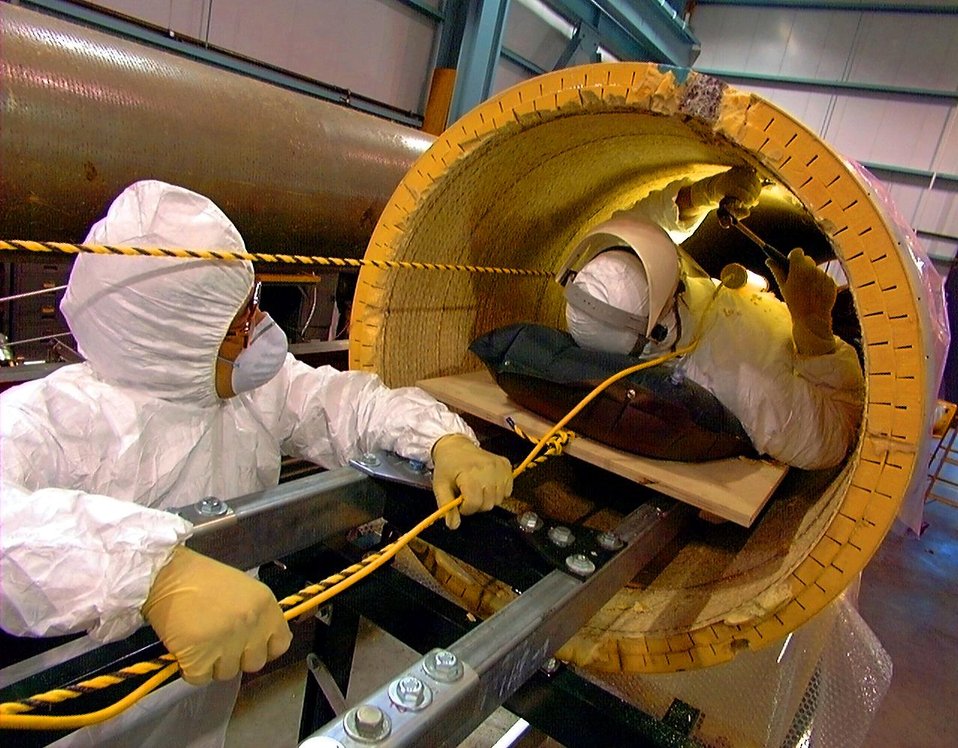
Relativistic Heavy Ion Collider (RHIC) at Lawrence Berkeley National Laboratory.

The STAR (Solenoidal Tracker at RHIC, Relativistic Heavy Ion Collider), is a massive detector system for studying types of subatomic particles called hadrons. The RHIC built at Brookhaven National Lab. The STAR collaboration includes nearly 200 scientists and engineers from 26 institutions institutions around the world.